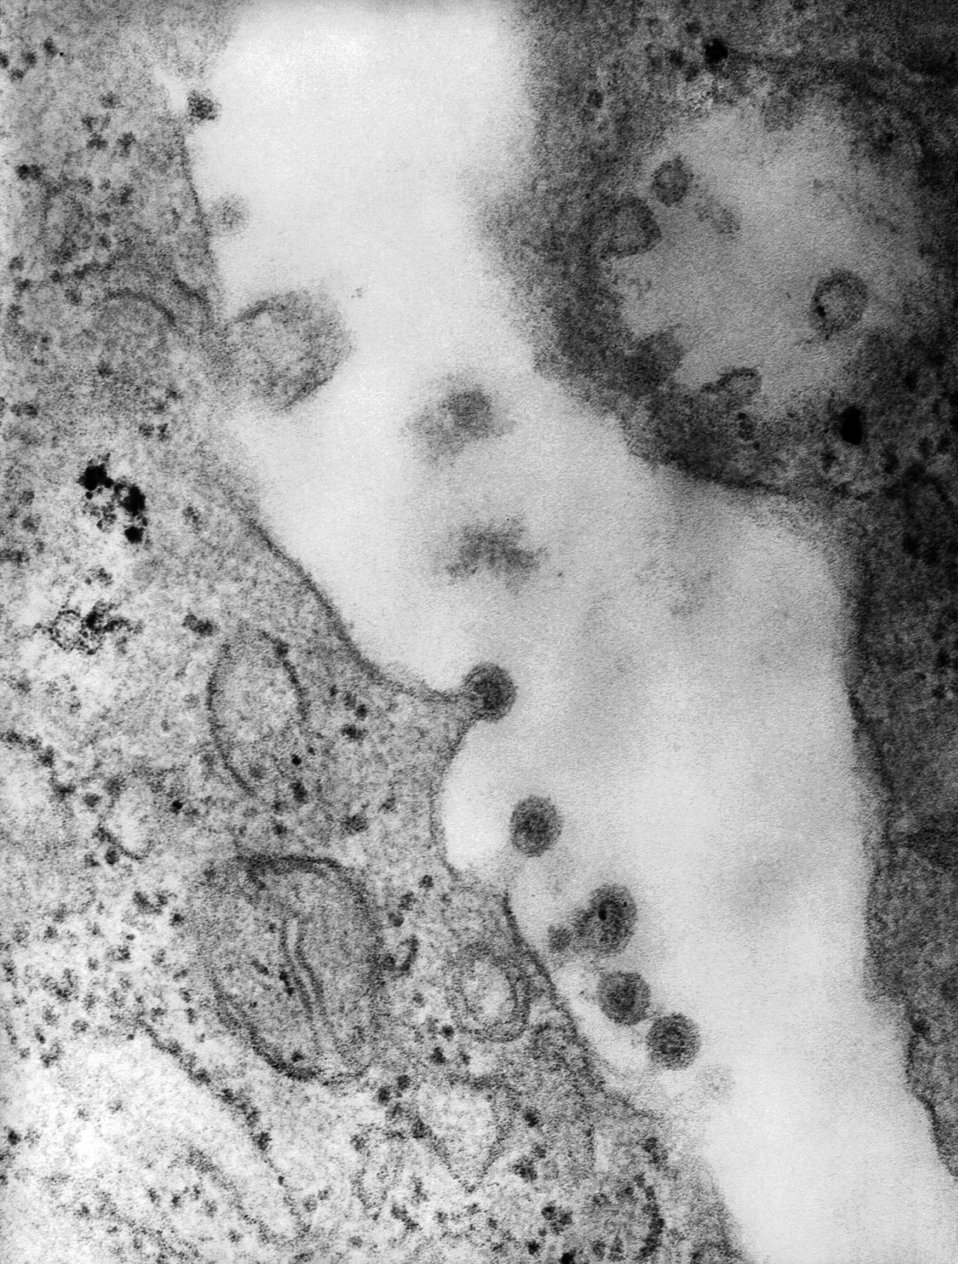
This negatively-stained transmission electron micrograph (TEM) revealed the presence of Rubella virus virions, as they were in the process of budding from the host cell surface to be freed into the host's system, thereby, producing an enveloped virus particle, which means that after budding, the spherical virions' icosahedral capsid is enclosed in the host cell membrane. Inside the capsid lies the Rubella virus' positive-sense single-stranded RNA (( )ssRNA) genome. The Rubella virus is known to be the cause of rubella, otherwise known as German measles.